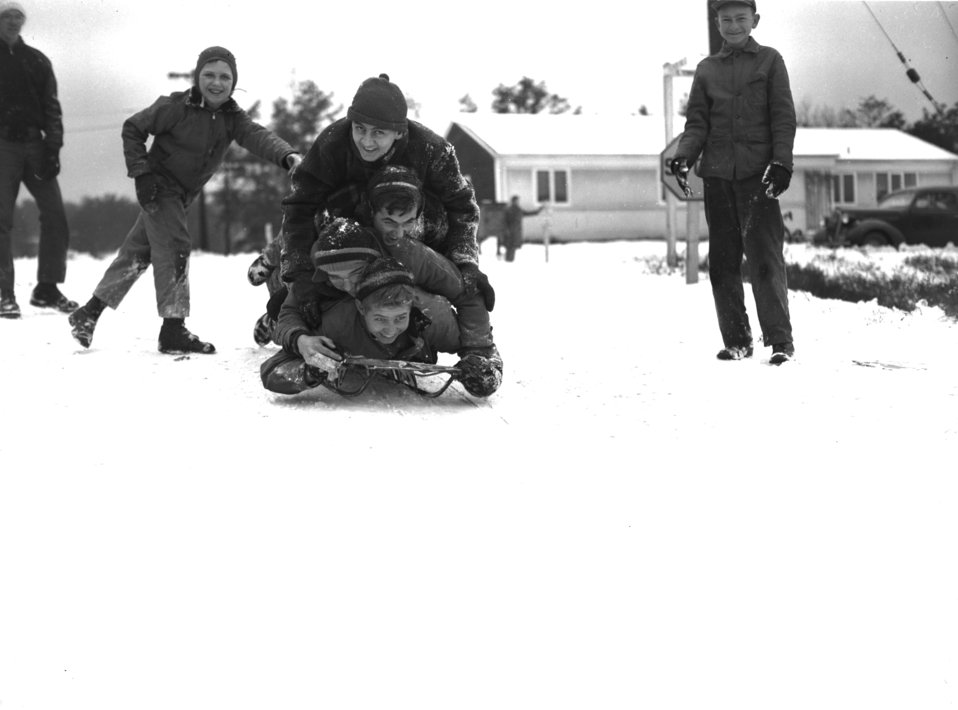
Fun in the Snow 3

4276-7a DOE Photo by Ed Westcott Oak Ridge Tennessee 1-25-1948